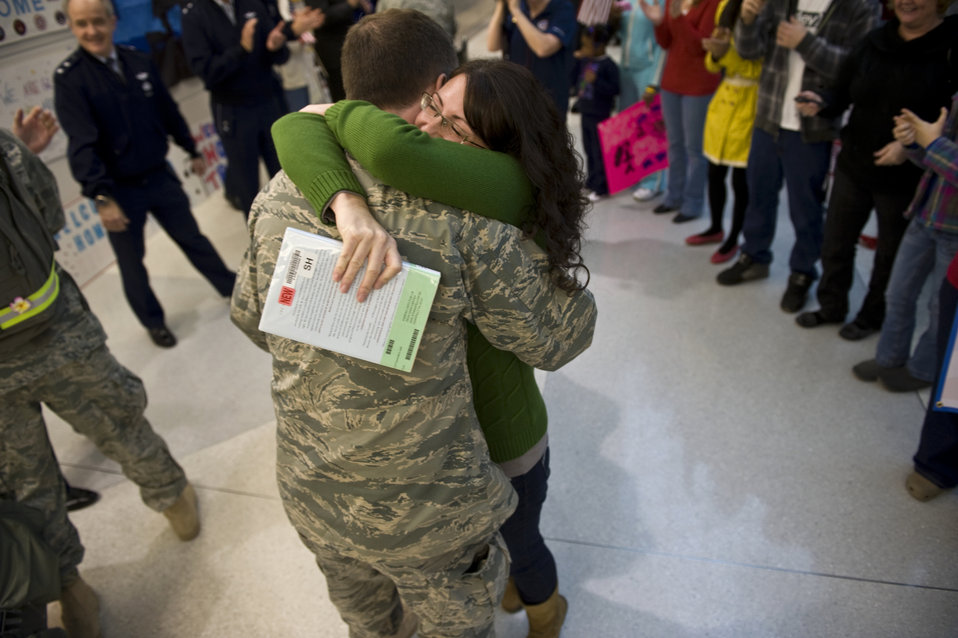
Last Airmen in Iraq return

An Airman returning from Iraq greets his wife Dec. 20, 2011, at Baltimore/Washington International Thurgood Marshall Airport in Baltimore, Md. More than 200 Airmen were on the flight that carried some of the last Airmen to return from Iraq. The Airmen arrived home in time for Christmas as stated by the president.